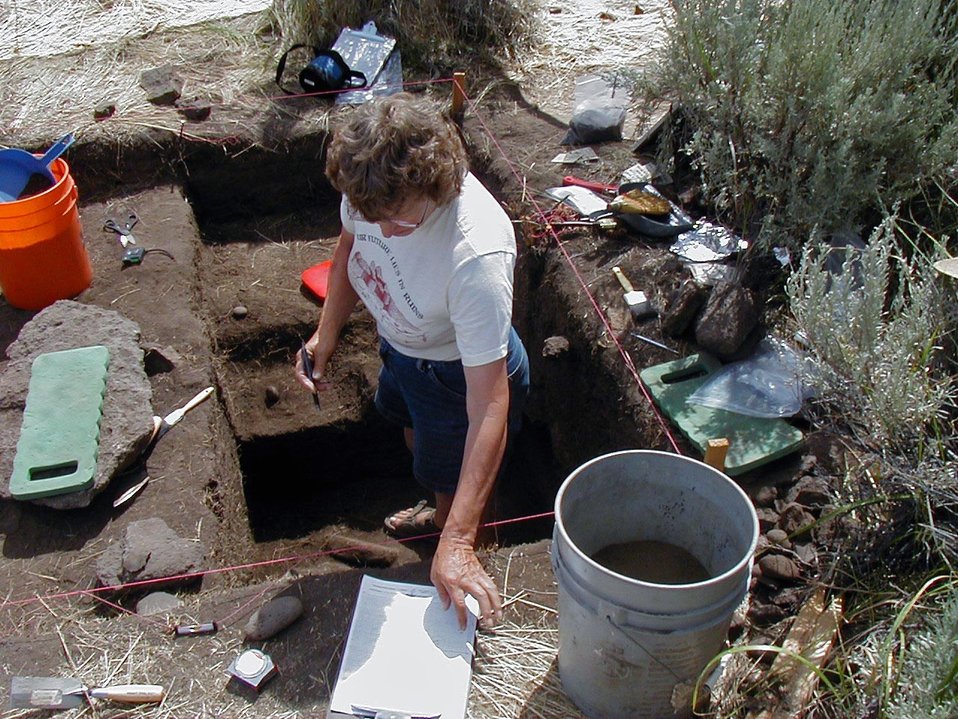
Oregon Archaeological Society and other volunteers have contributed thousands of hours of labor to on-going archaeological work at Burns BLM sites.